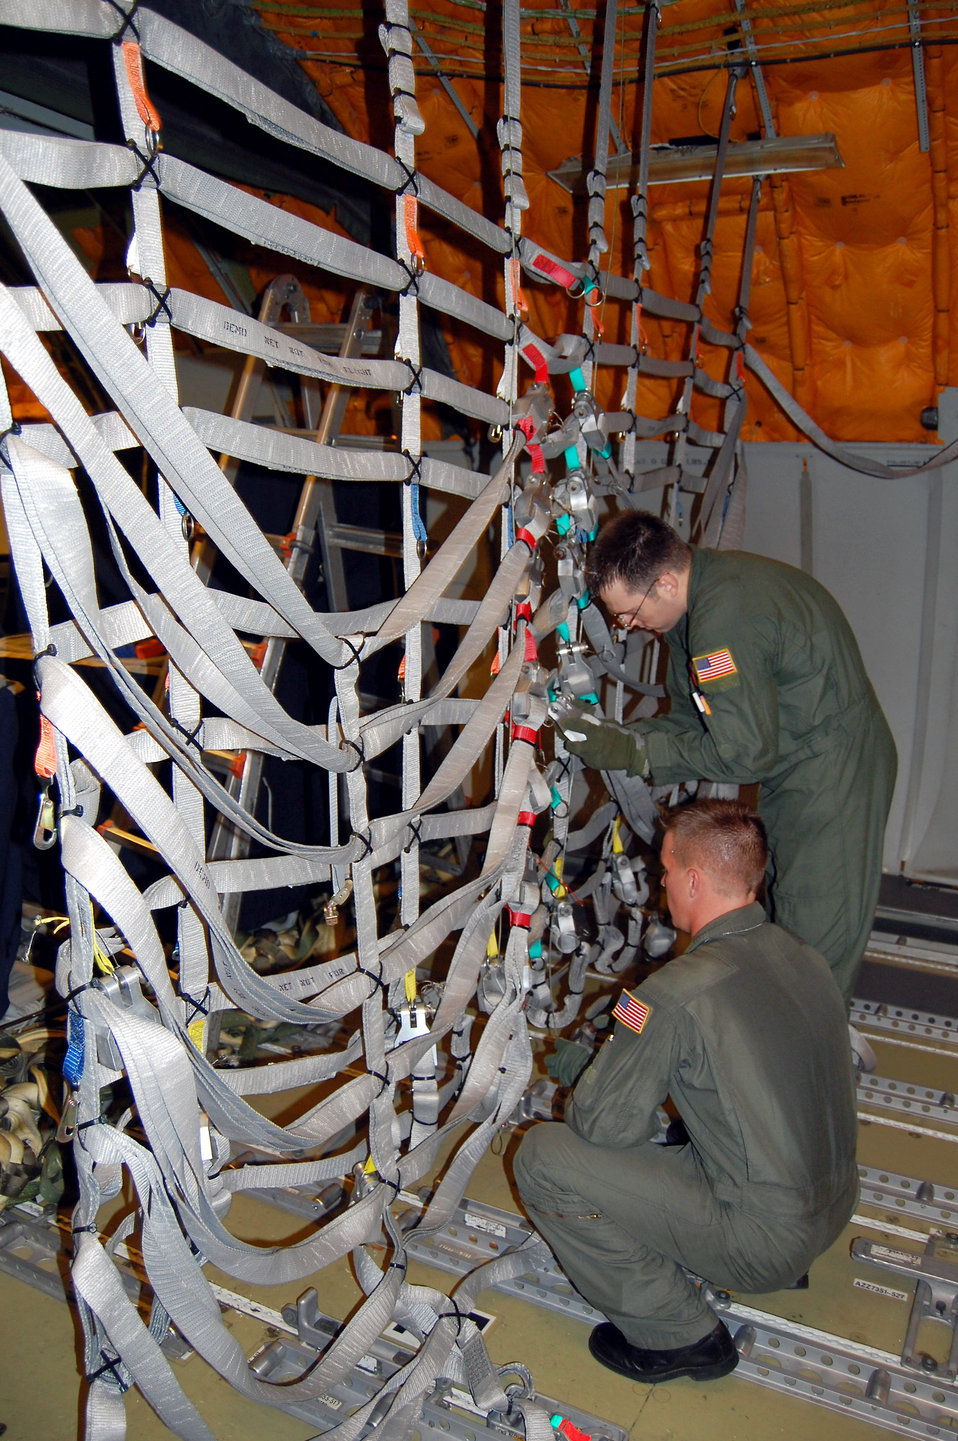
Battlelab initiative aims to speed KC-10 cargo loading

Boom operators from McGuire Air Force Base, N.J., install an alternative, lightweight cargo net inside a KC-10 Extender Sept. 16 as part of a demonstration for the Air Mobility Battlelab. The demonstration was for the battlelab's KC-10 Lightweight Cargo Net and Hoist Initiative which was recommended for use to Air Mobility Command. It was one of the last initiatives of the AMB, which deactivated Sept. 24 at the U.S. Air Force Expeditionary Center on Fort Dix, N.J.